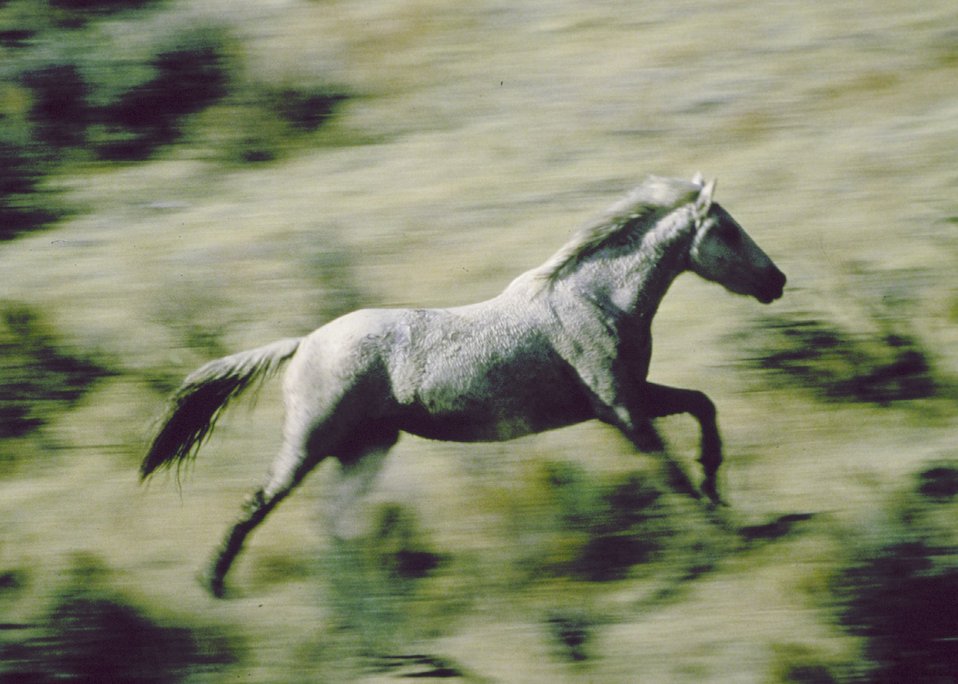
Wild horse running on public lands in Wyoming.